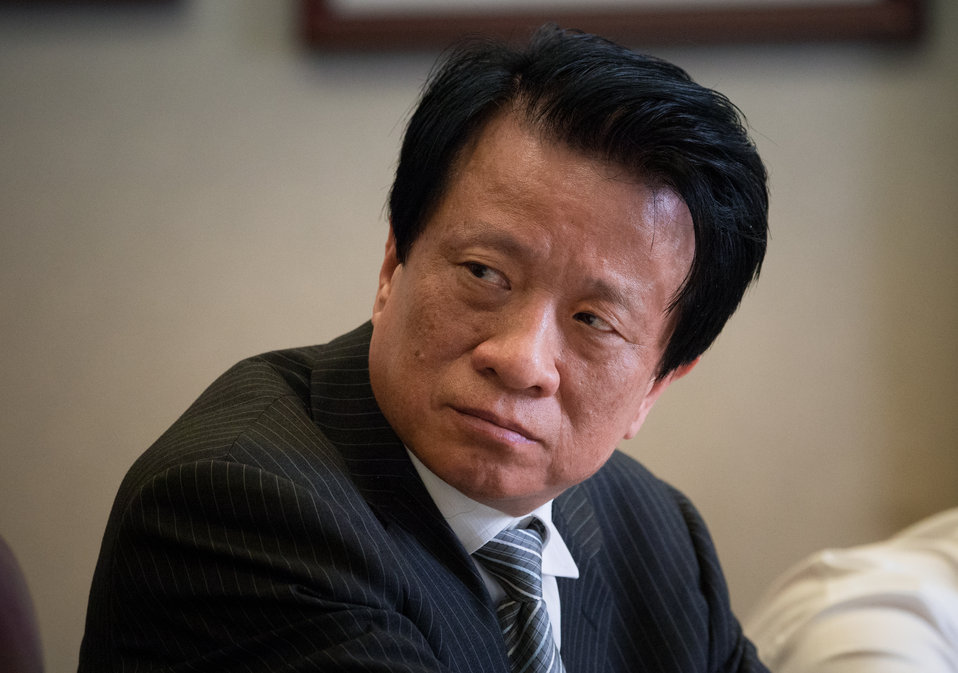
The People’s Republic of China Ministry of Agriculture (MOA) Department of Finance Director-General Li Jianhua, listens to Vice Minister H.E. Zhang Taolin during a meeting at the U.S. Department of Agriculture (USDA) headquarters Whitten Building, in Washington, D.C., on Friday June 13, 2014.